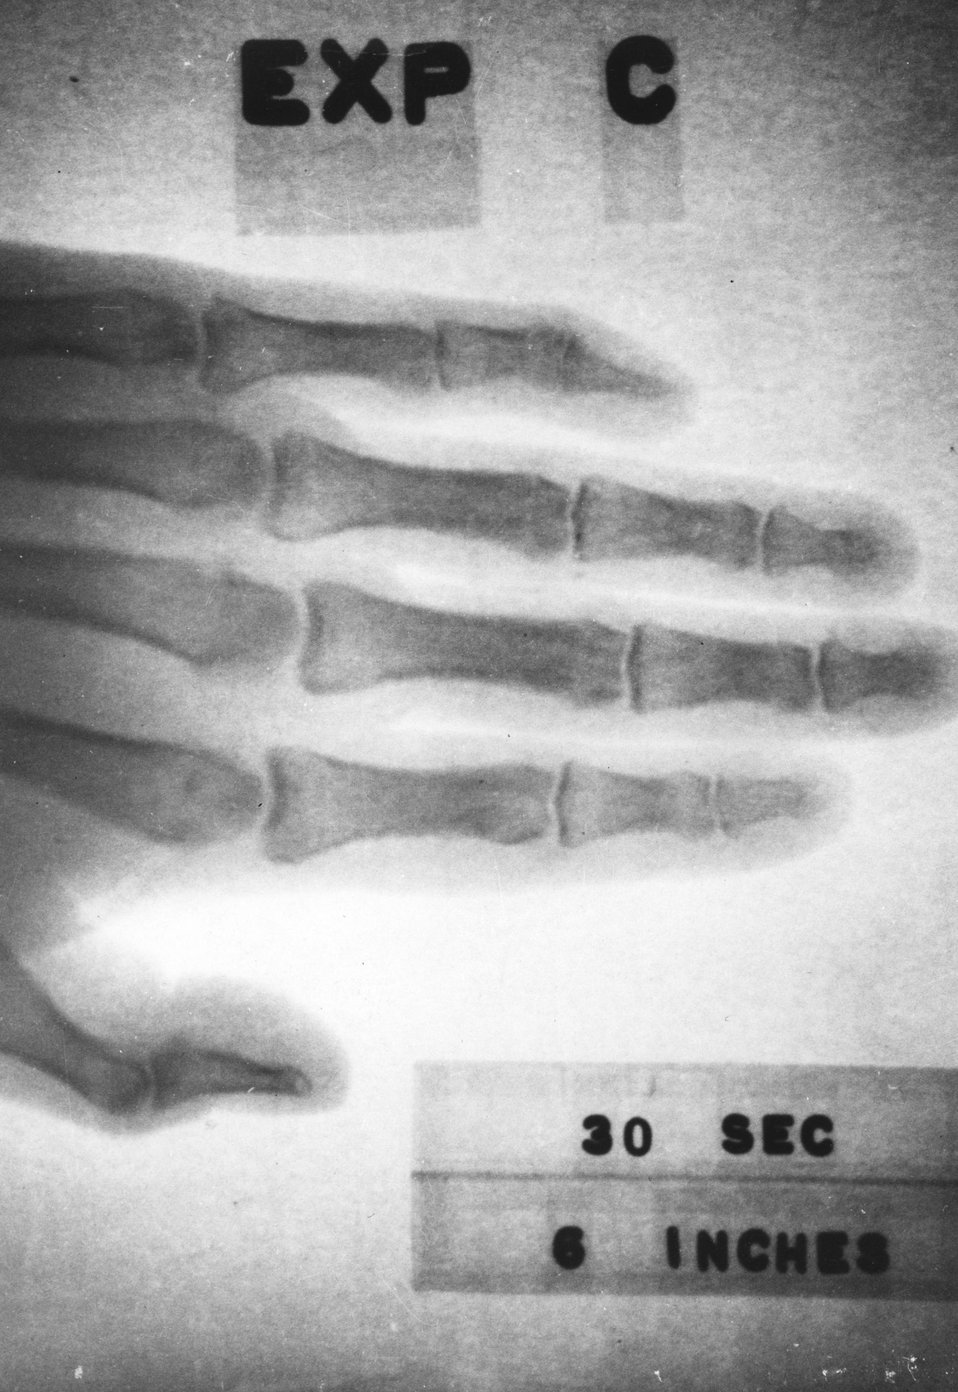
A small X-ray system powered by promethium 147 and about the size of a cigarette package has been developed by Armour Research Foundation under an AEC contract. Circa 1963.